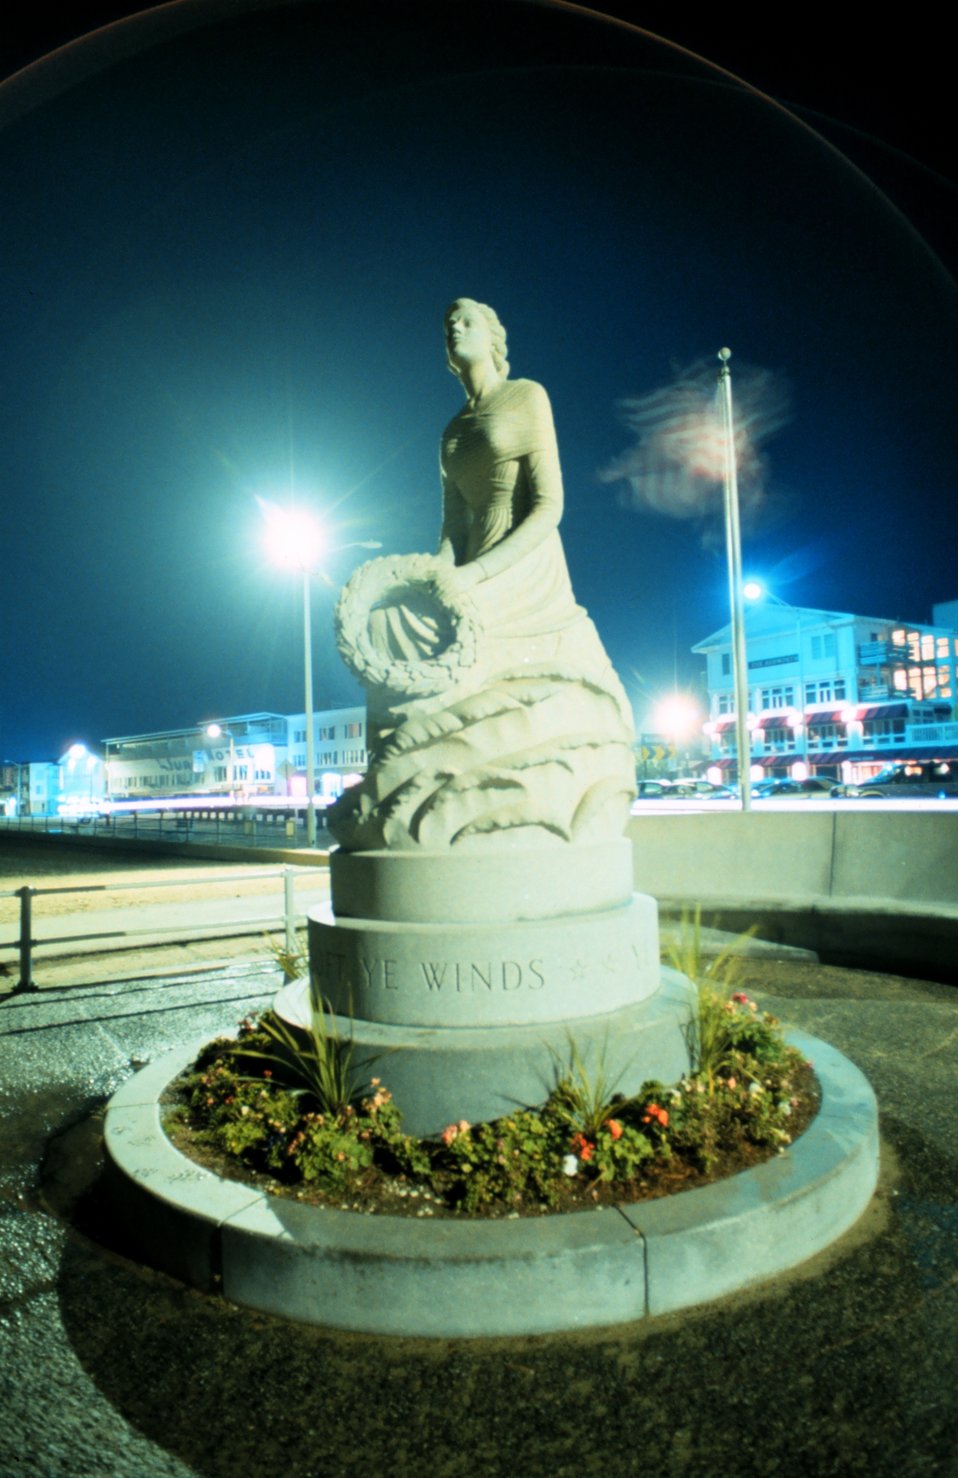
Memorial to those who watch and wait for loved ones to return from the sea.